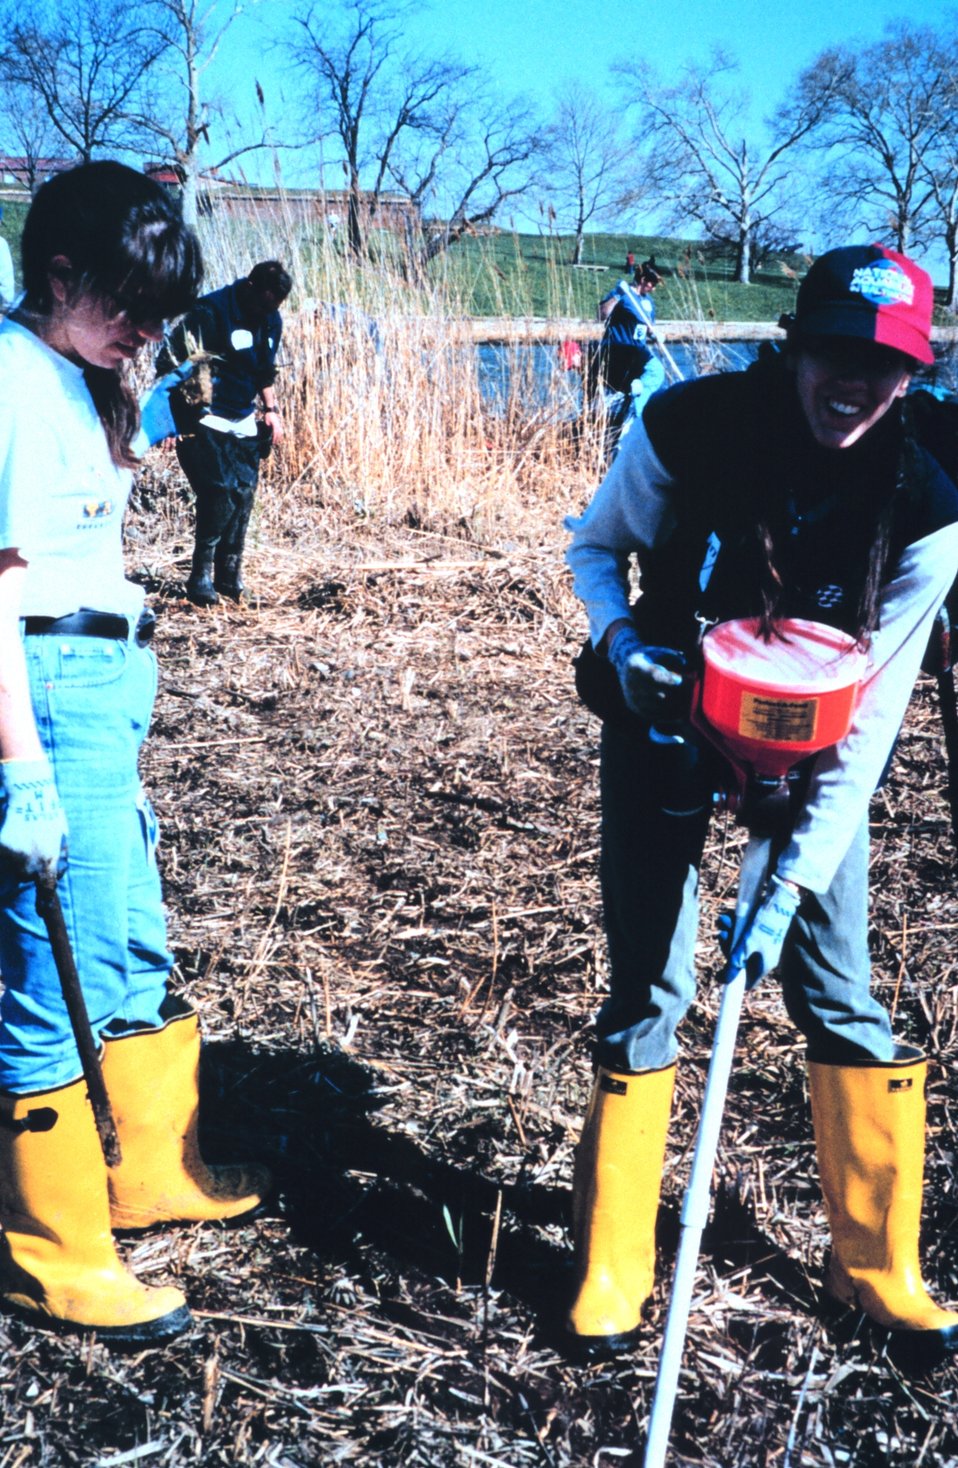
Volunteers helping clean up the wetlands and waterfront area around Fort McHenry in Baltimore Harbor.